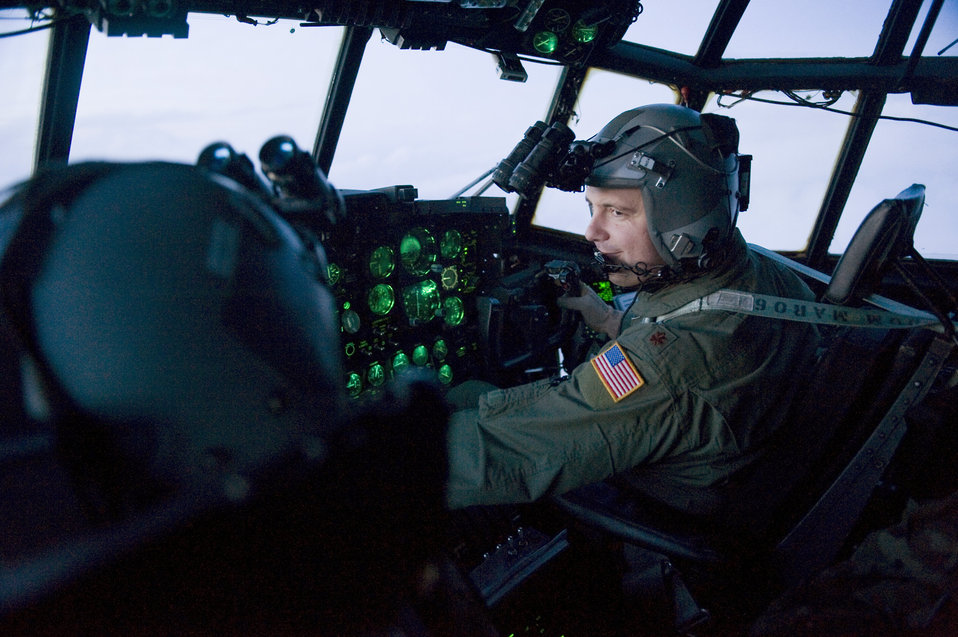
Standing up at Sendai airport

Maj. Kerry Redman flies toward Sendai airport to deliver supplies March 16, 2011. The crew brought water, food, fuel and other general supplies to 353rd Special Operations Group members who are conducting search and rescue missions from the airport. The Airmen are establishing a usable runway at Sendai Airport to help with Japan's earthquake and tsunami relief. Major Redman is assigned to the 17th Special Operations Squadron.